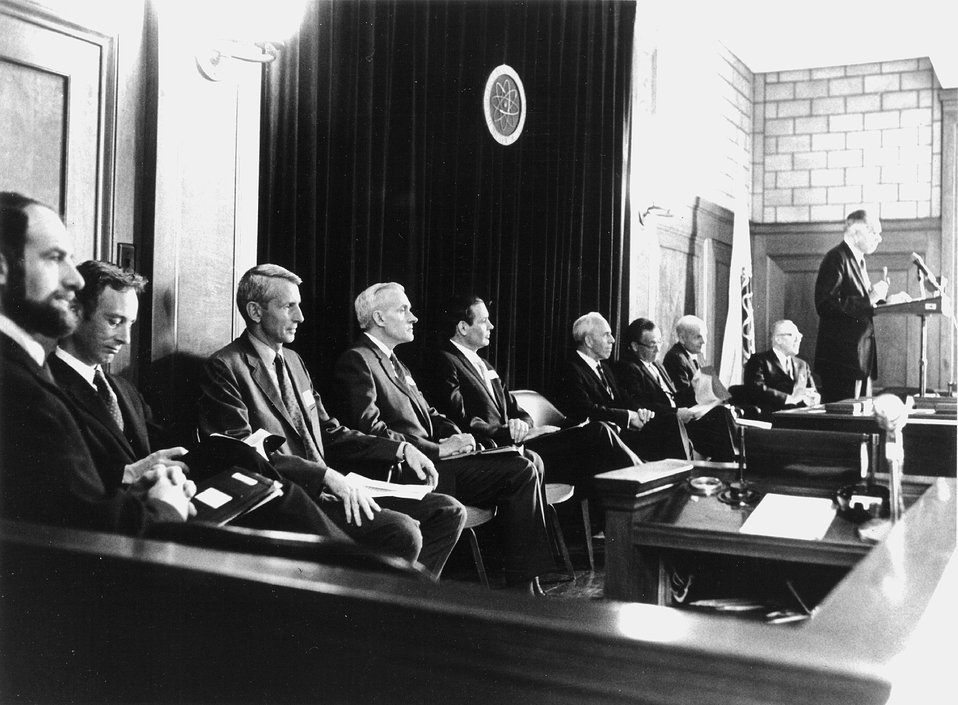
The AEC 1970 E.O. Lawrence Memorial Award ws presented to five U.S. scientists on May 28, 1970, in ceremonies at the National Academy of Sciences in Washington D.C. c. 1970